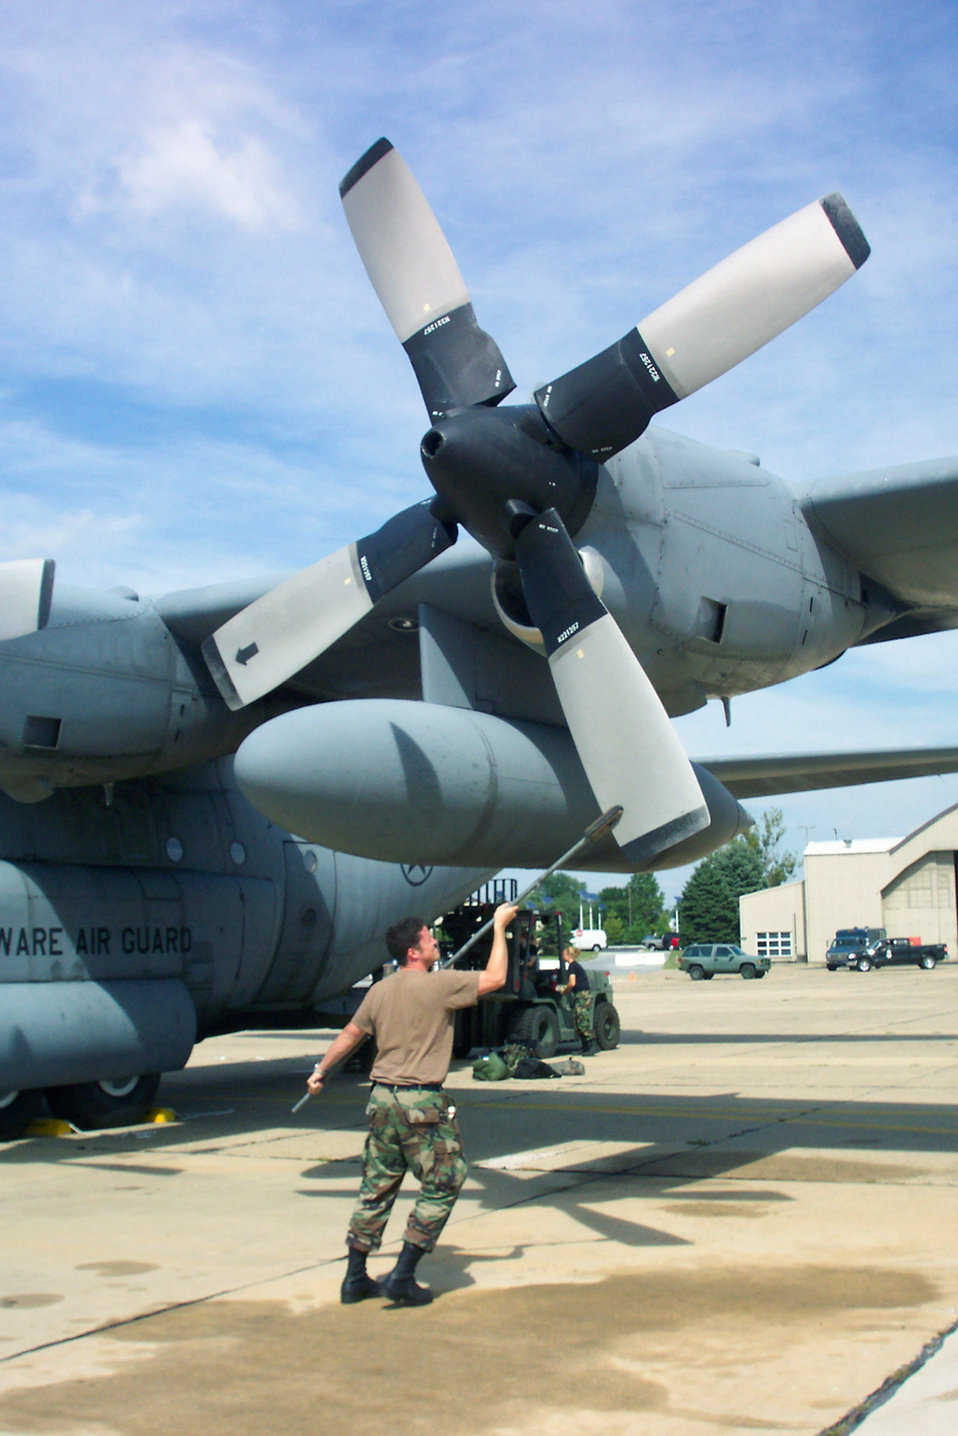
Getting things into their prop-er place

NEW CASTLE, Del. -- Staff Sgt. Caleb Mosher moves the propellers on a Delaware Air National Guard C-130 Hercules that returned Sept. 3 from a mission supporting Operation Enduring Freedom. Sergeant Mosher is a C-130 aircraft turboprop mechanic and crew chief in the Delaware ANG here.